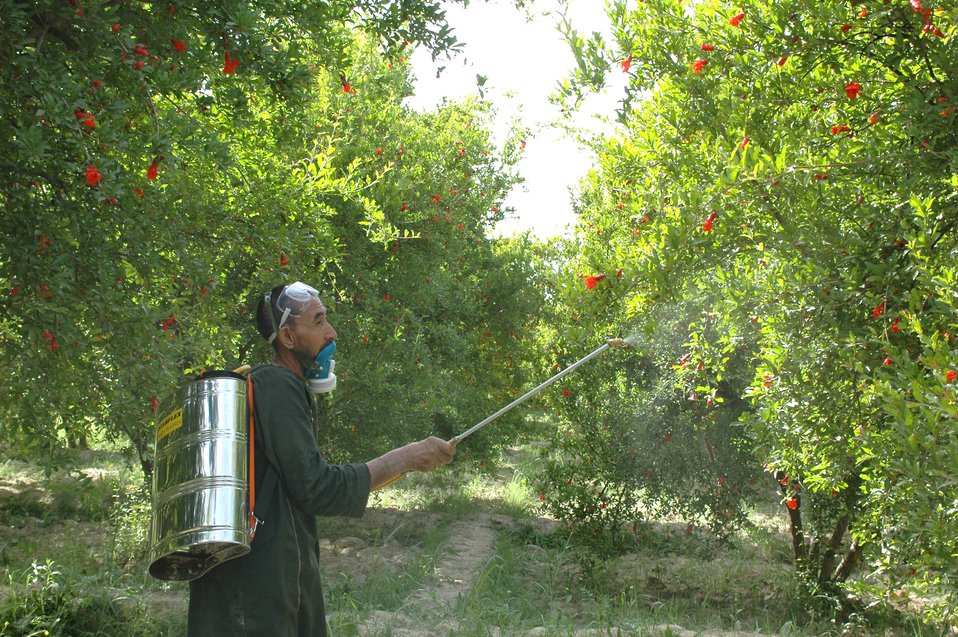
Dr Shah Visits Argandab April 10, 2010